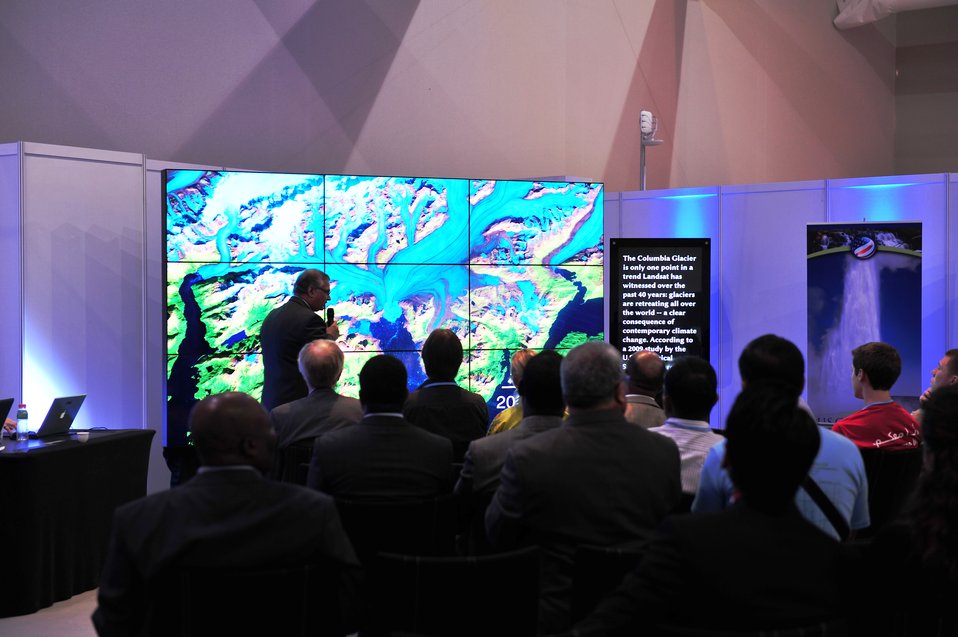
NASA's Dr. Habib Presents 40 Years of Landsat Programs

Dr. Shahid Habib, Chief of the Office of Applied Sciences at NASA, 40 years of Landsat programs on the Hyperwall at the U.S. Center at the 18th Session of the Conference of the Parties to the UN Framework Convention on Climate Change (COP-18) in Doha, Qatar, December 7, 2012.